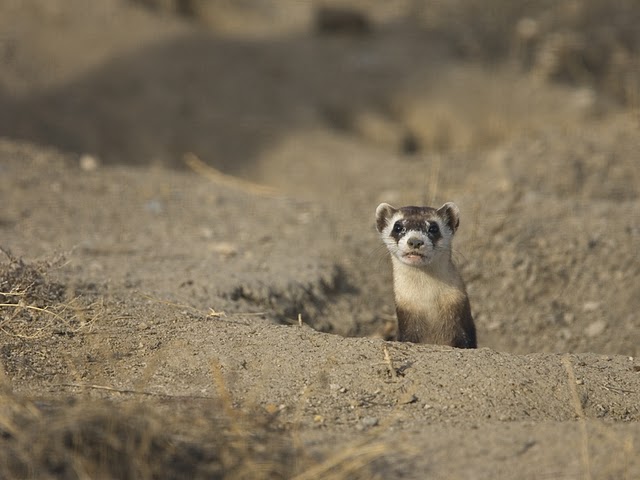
Black-footed Ferret Peeks Out From Burrow

A black-footed ferret peeks its head our of a burrow at the National Black-footed Ferret Conservation Center